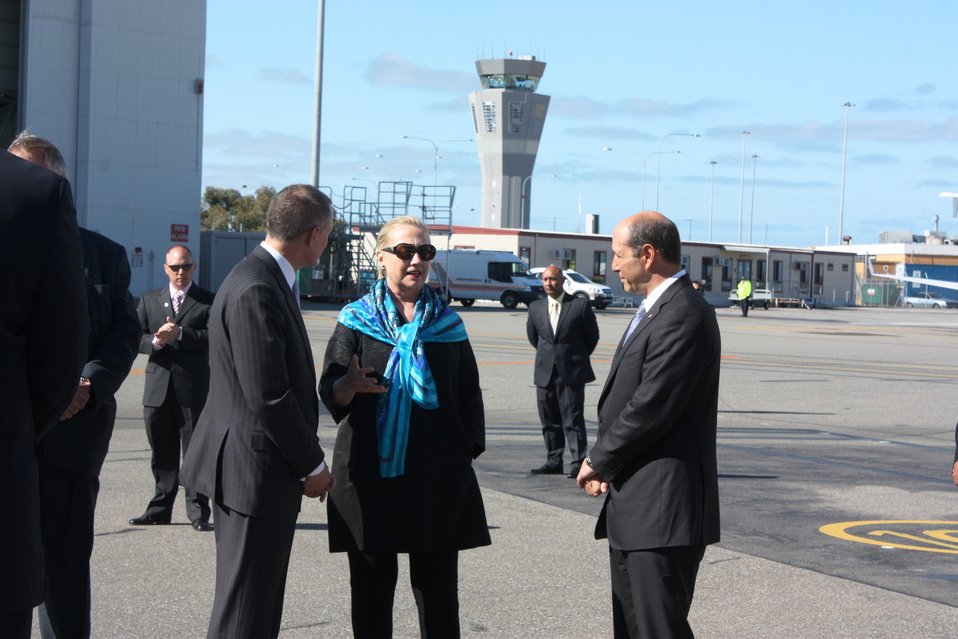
Premier Weatherall, Secretary Clinton, and Ambassador Bleich Talk

Left to right, Premier of South Australia Jay Weatherall, U.S. Secretary of State Hillary Rodham Clinton, and U.S. Ambassador to Australia Jeffrey Bleich talk before Secretary Clinton departs Adelaide, Australia, November 15, 2012.